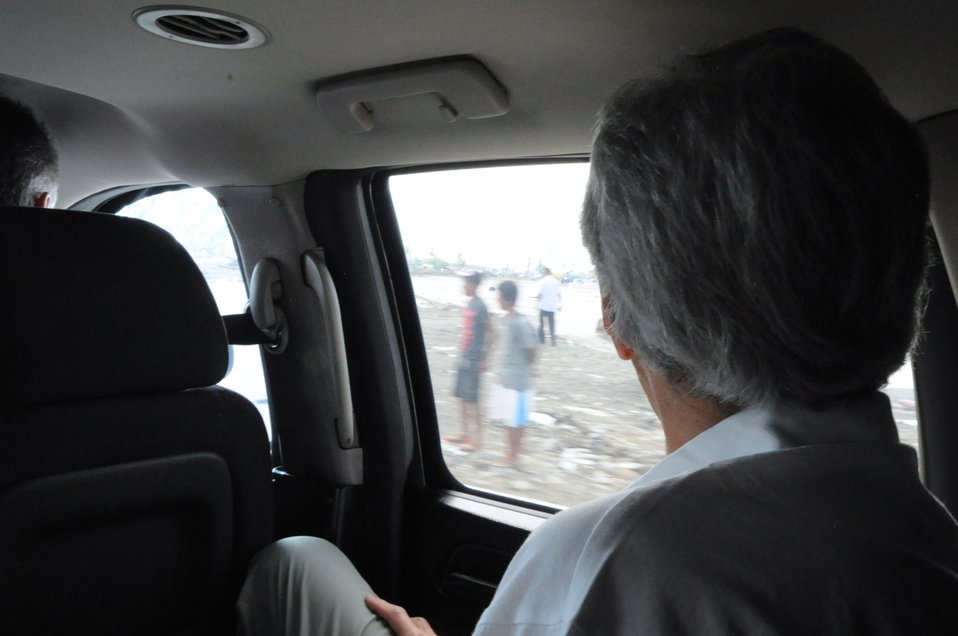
Secretary Kerry Gets a Ground-Level View of Typhoon Haiyan Damage in Tacloban City

U.S. Secretary of State John Kerry gets a street-level view of damage caused and residents affected by Typhoon Haiyan as he visits Tacloban City, Philippines, to announce $25 million in fresh U.S. recovery aid on December 18, 2013.